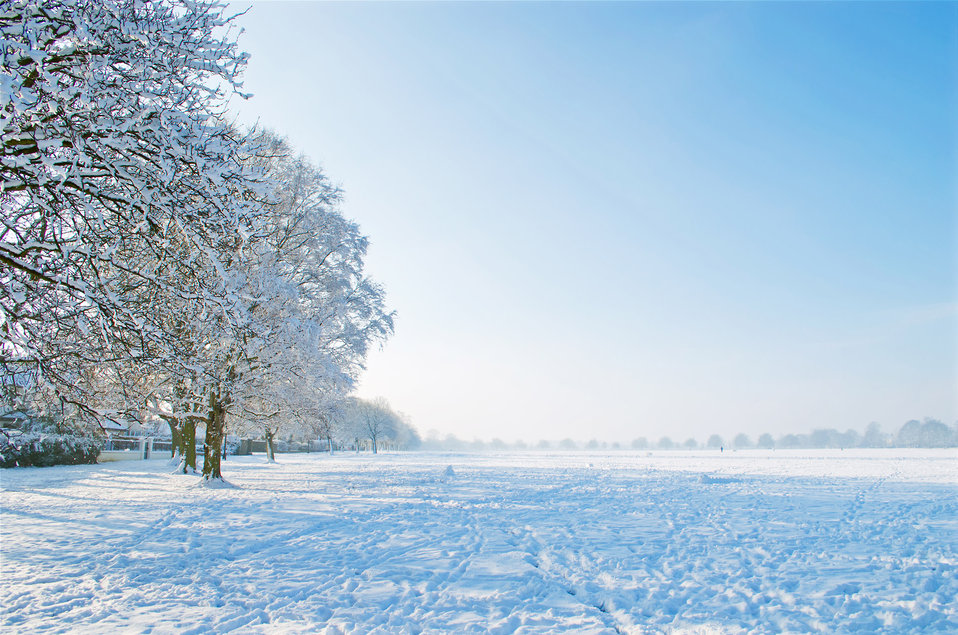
A beautiful winter park.